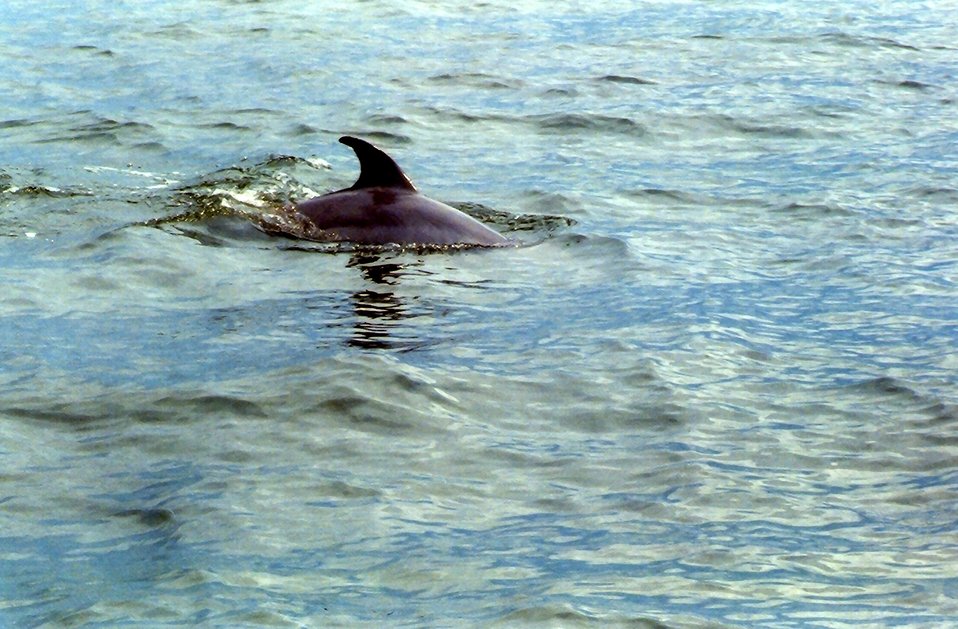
Dolphin caudal fin.